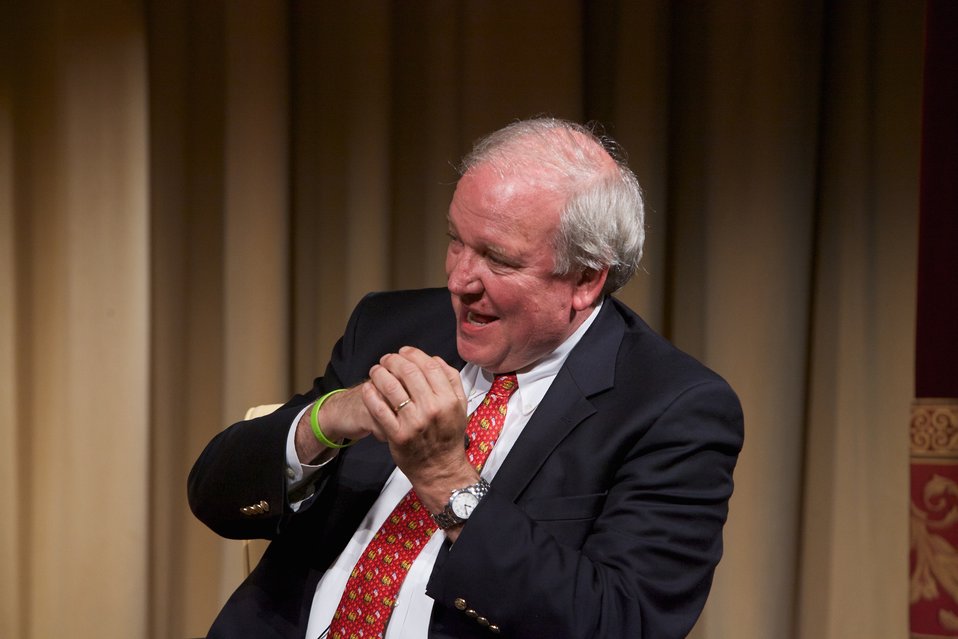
The Role of Congress in International Crises